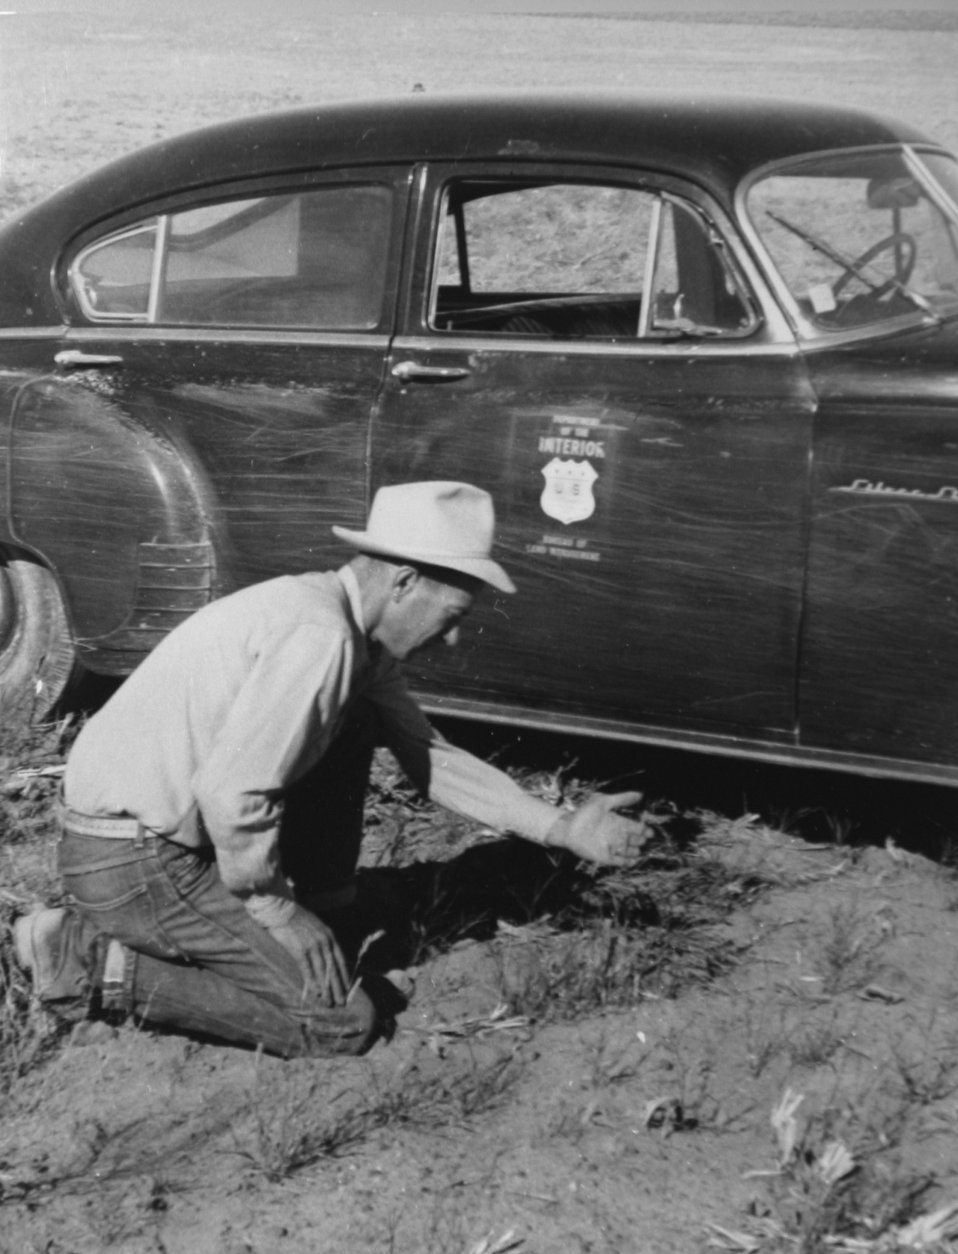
District Range Manager Howard DeLana inspects success of Hurlburt Reseeding west of Harney Lake, Sept. 1955